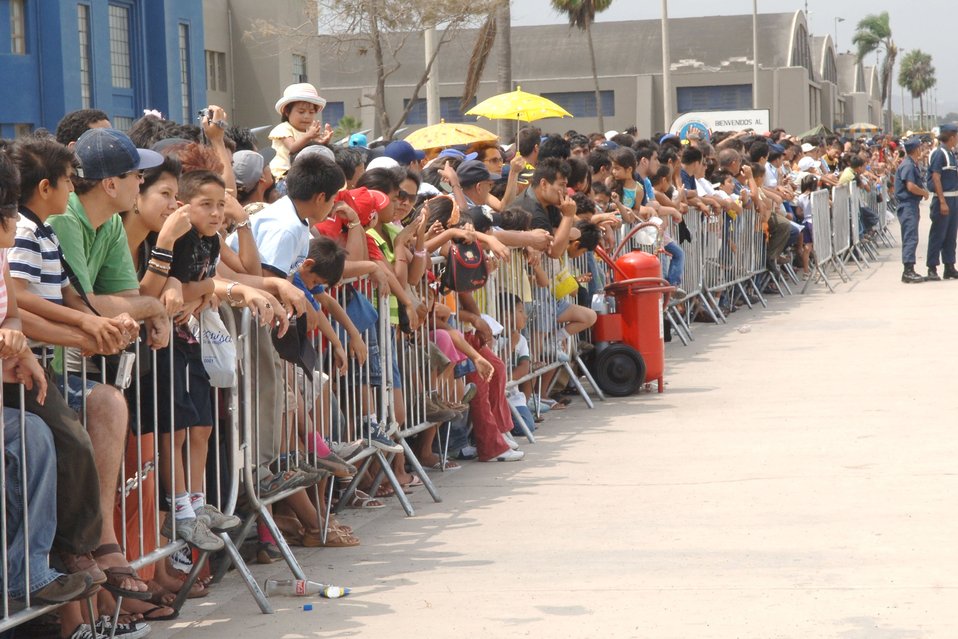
Airmen kick off part two of Falcon Condor 2007

A crowd of more than 15,00 Peruvians gather on the flight line of Las Palmas Air Force Base in Lima, Peru, Feb. 17 to watch the joint air show Falcon Condor 2007. The joint exercise and air show directly supports the U.S. Southern Command's engagement goals.